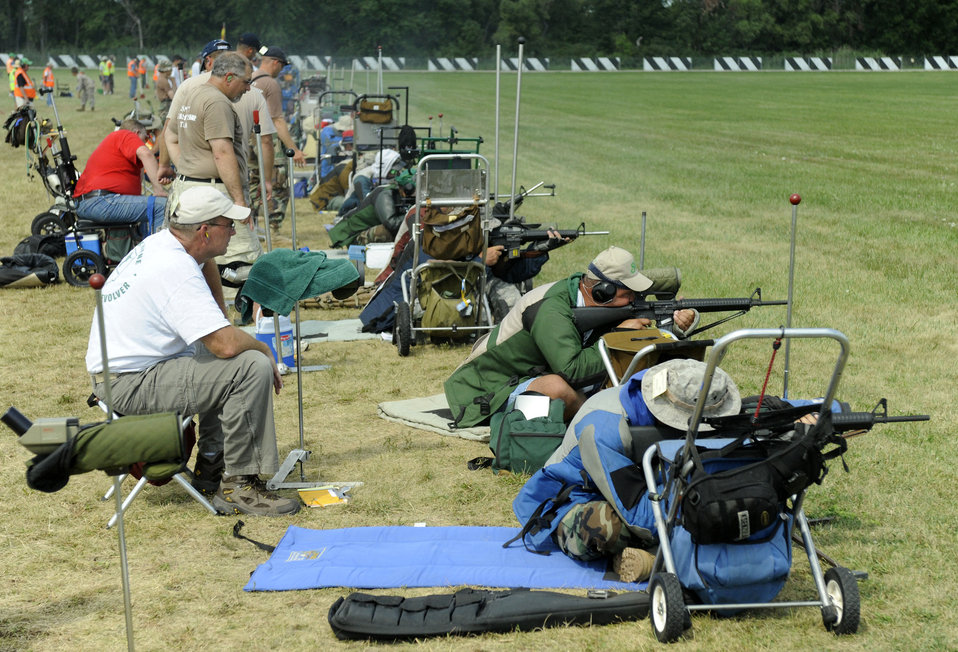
U.S. Air Force Shooting Team

Competitors fire from the prone position during the 600-meter portion of the high-powered rifle competition of the National Rifle and Pistol Championships at Camp Perry, Ohio. The championships are sponsored by the National Rifle Association and draw several thousand marksmen from around the United States, including teams from the Army, Air Force, Navy and Marines.